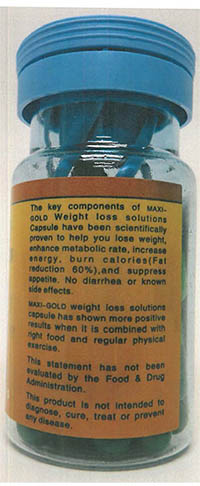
RECALLED – Dietary Supplement

March 25, 2014 – Product Recall – New Life Nutritional Center Issues Voluntary Nationwide Recall of Super Fat Burner, Maxi Gold and Esmeralda Dietary Supplements Due to the Presence of Undeclared Sibutramine and Phenolphthalein.